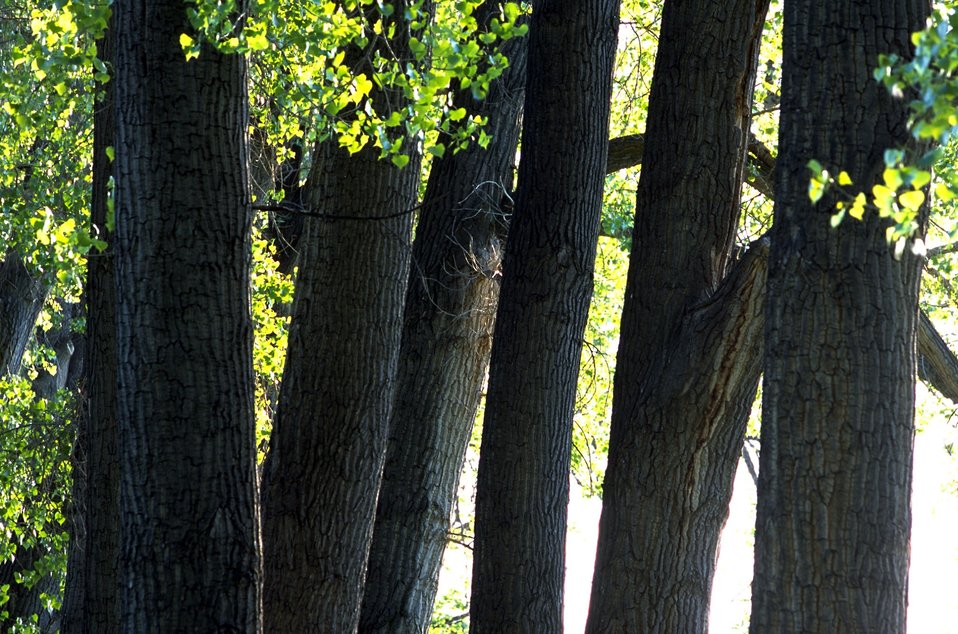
View of six cottonwood tree trunks